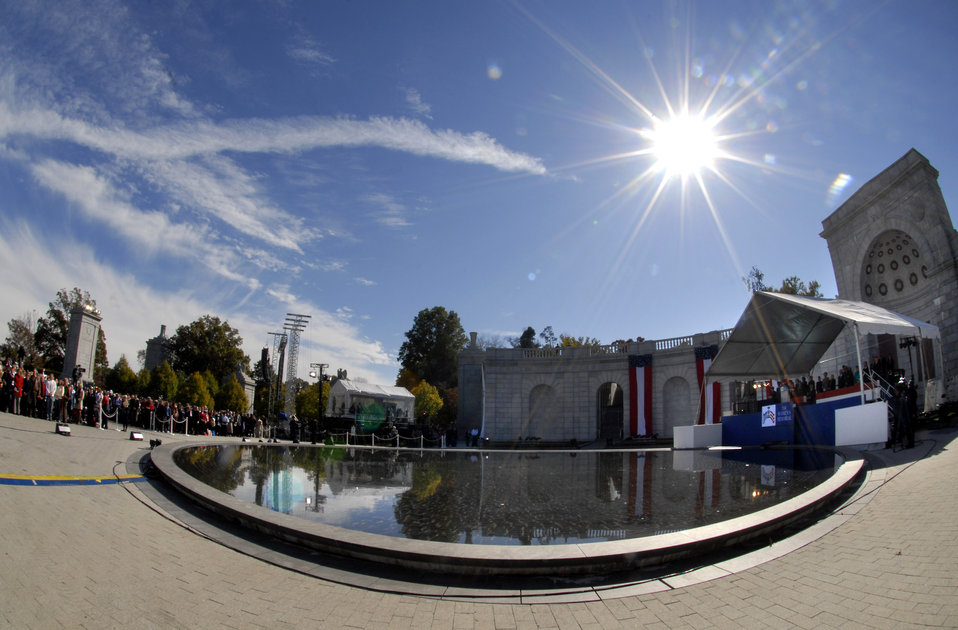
10th anniversary of WIMSA

Secretary of Defense Robert M. Gates addresses the crowd during the ceremony Nov. 3 celebrating the 10th anniversary of the Women in Military Service for America Memorial at Arlington National Cemetery.